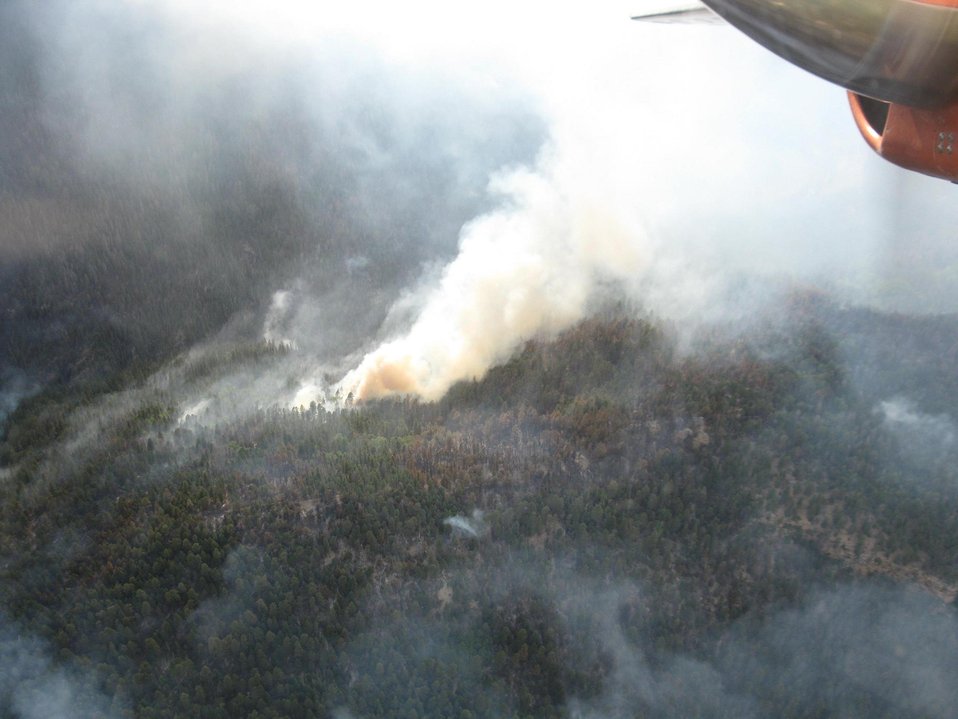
The Little Sand Wildfire burns in the San Juan National Forest near Pagosa Springs, CO on Tuesday, June 2, 2012. The wildfire was started by a lightening strike on May 13, 2012. The fire is in rugged and inaccessible terrain, north of the Piedra River, and is currently estimated at 14,224 acres with 30% containment as of June 20, 2012.